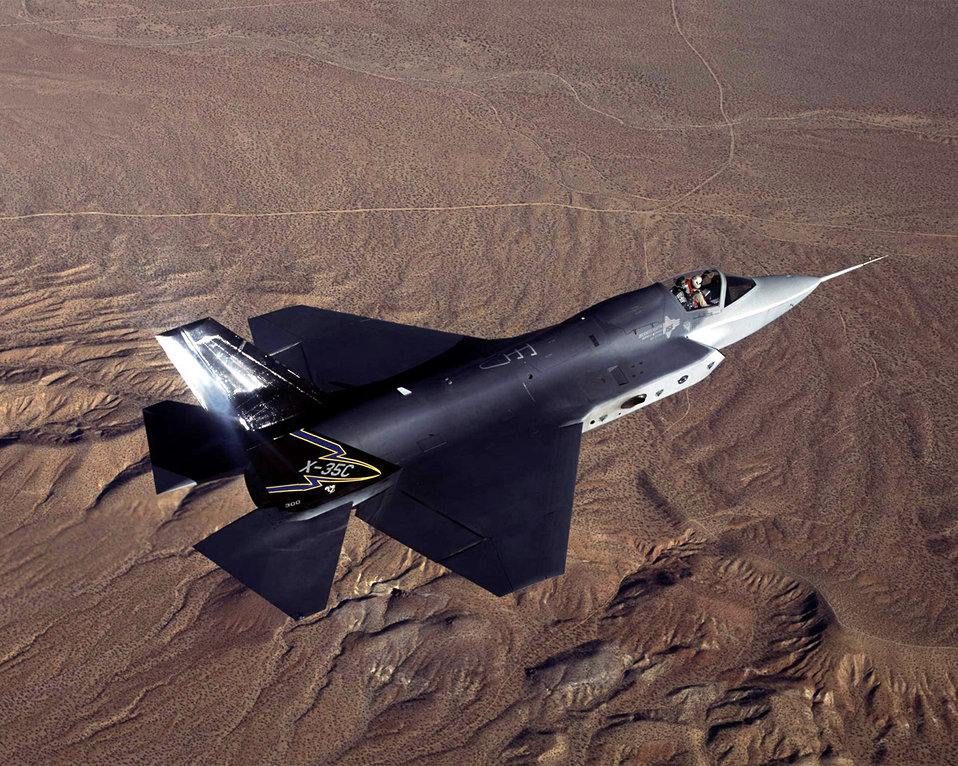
X-35C Joint Strike Fighter

EDWARDS AIR FORCE BASE, Calif. -- Lockheed Martin's Joint Strike Fighter, the X-35C, nears completion of flight testing at Edwards Air Force Base, Calif. The concept demonstrator will move to Naval Air Station Patuxent River, Md., for flight testing at sea level. Testing at NAS Patuxent River will give evaluators a more accurate picture of the JSF's carrier-suitability performance.
The JSF has made 20 sorties at Edwards to field test carrier landings, expansion of the flight envelope and initiating tanker-qualification trials.